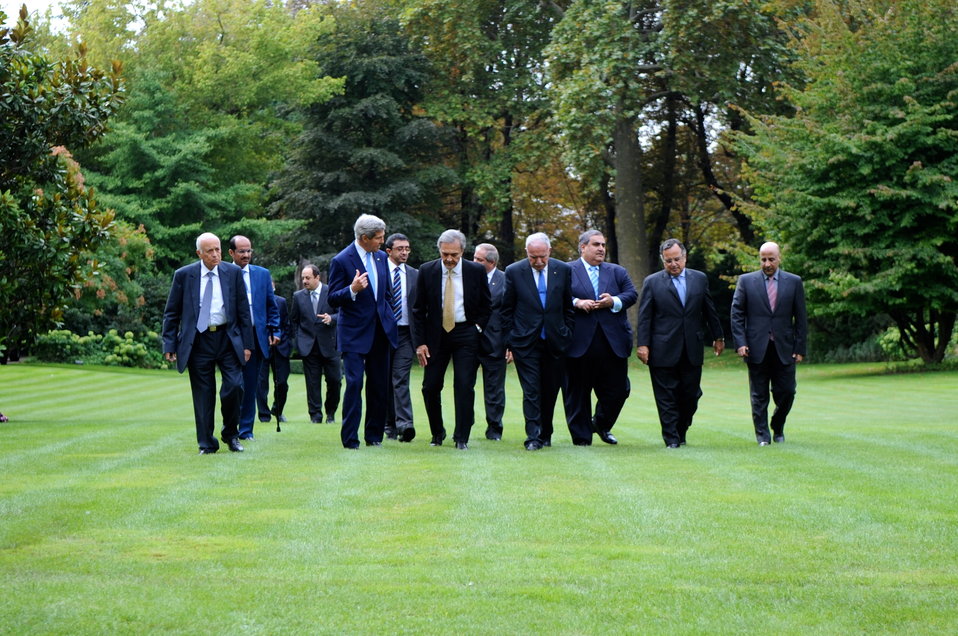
Secretary Kerry Walks With the Ministerial Delegation of the Arab Peace Initiative

U.S. Secretary of State John Kerry walks on the lawn of the U.S. Chief of Mission Residence in Paris, France, with the Ministerial Delegation of the Arab Peace Initiative on September 8, 2013.